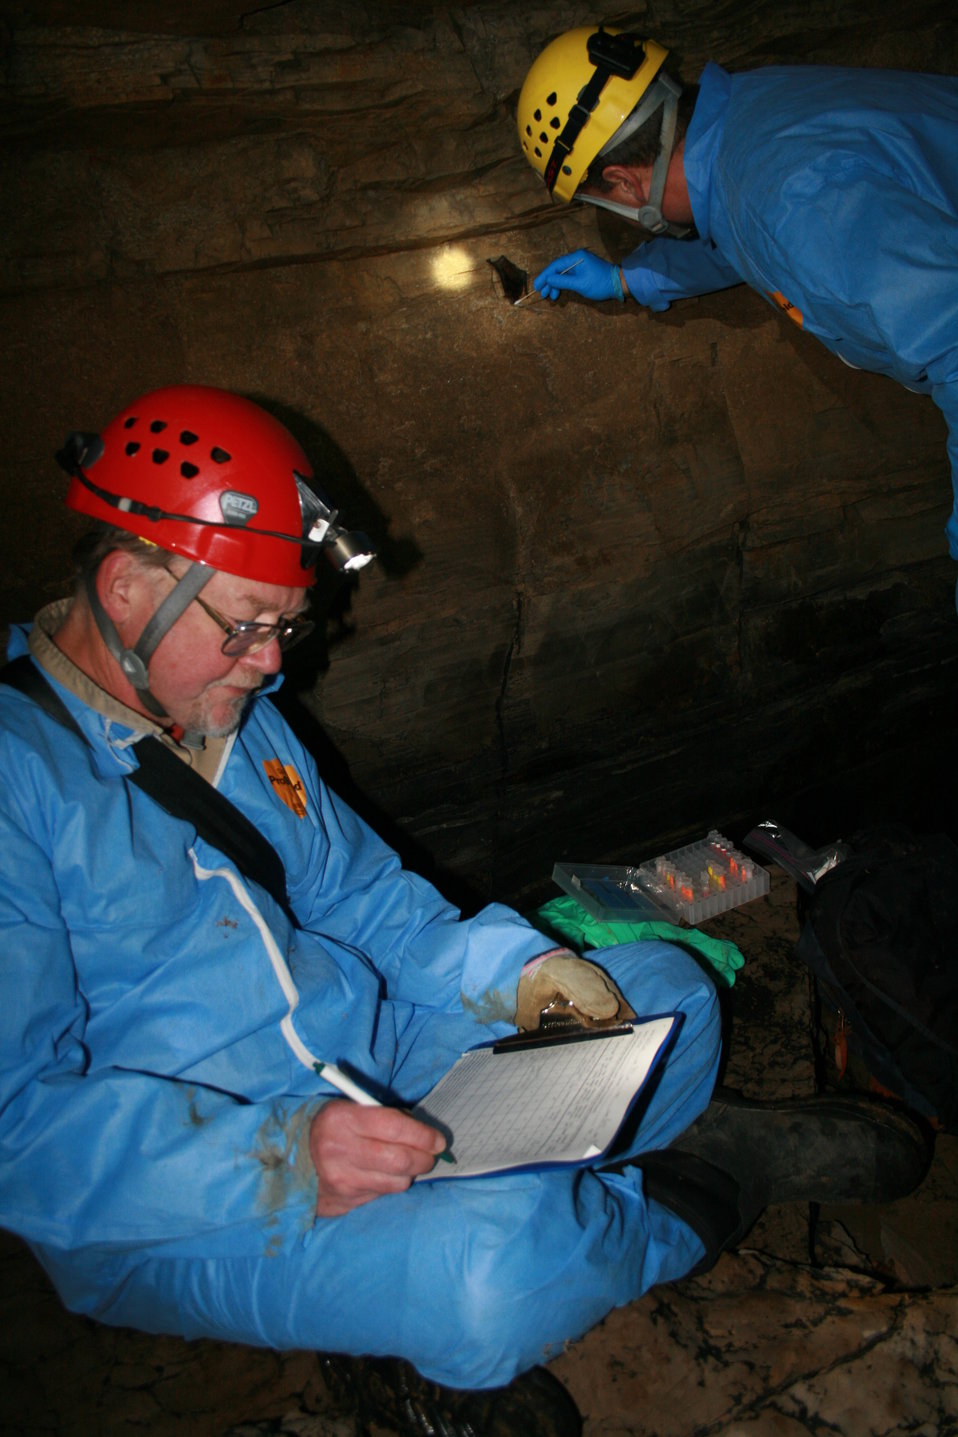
Swabbing bats

MDC biologist Tony Elliot swabs a bat for research, Scott House (Cave Research Foundation) collects data